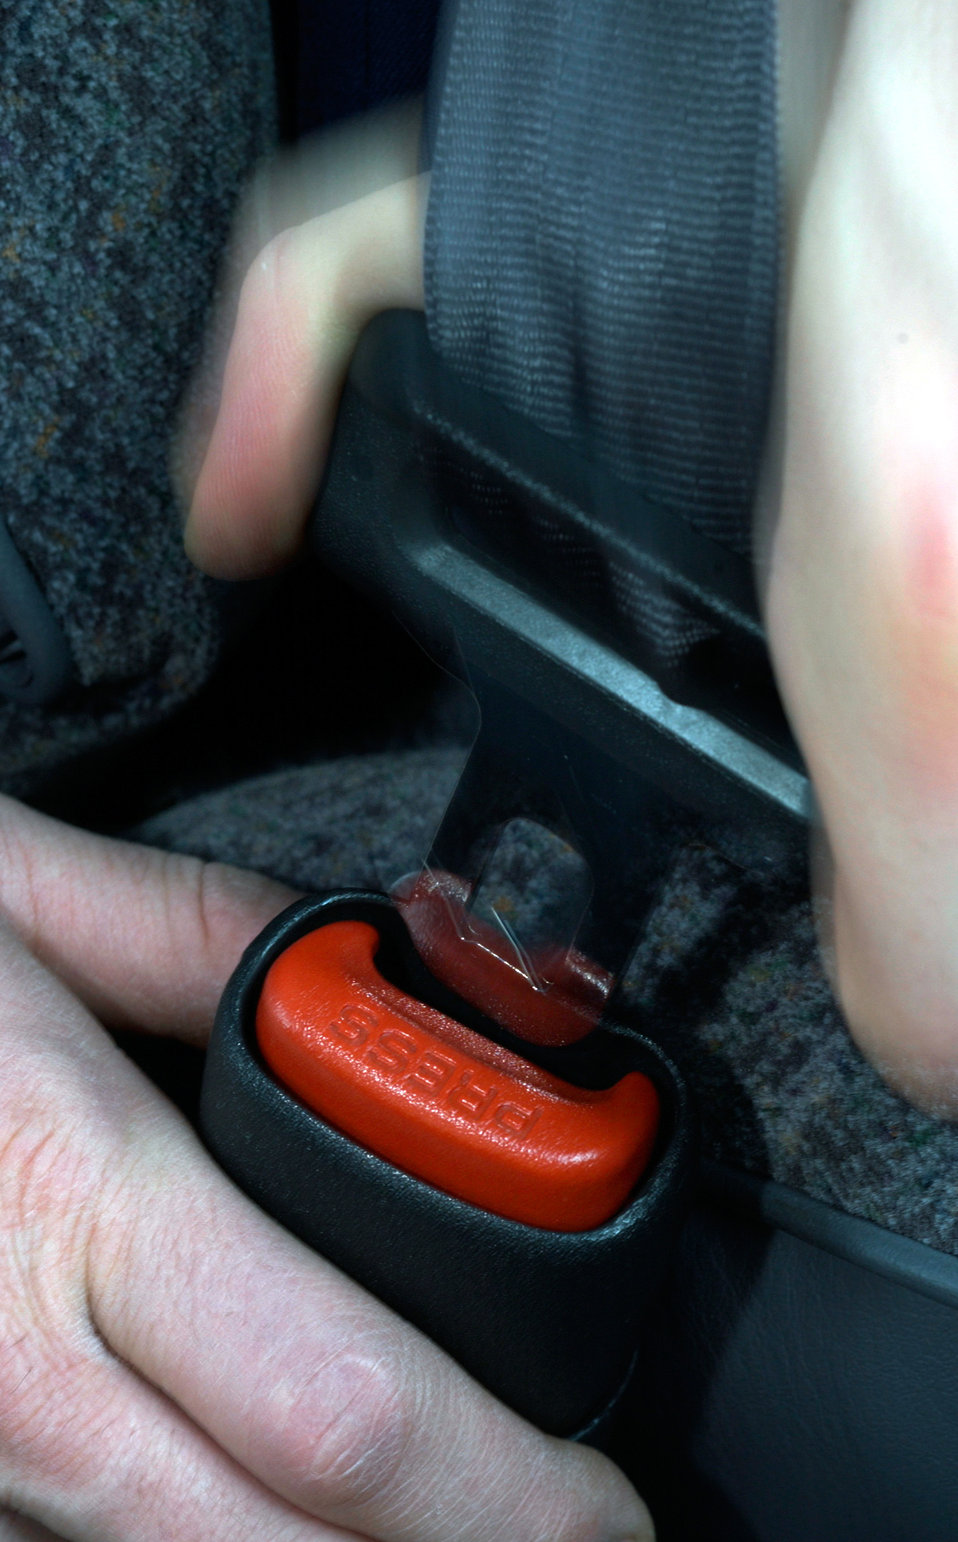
Make it click

WASHINGTON (AFPN) -- The 101 Critical Days of Summer safety campaign begins on Memorial Day. Safety officials ask that people pay extra attention to wearing seatbelts during the summer.